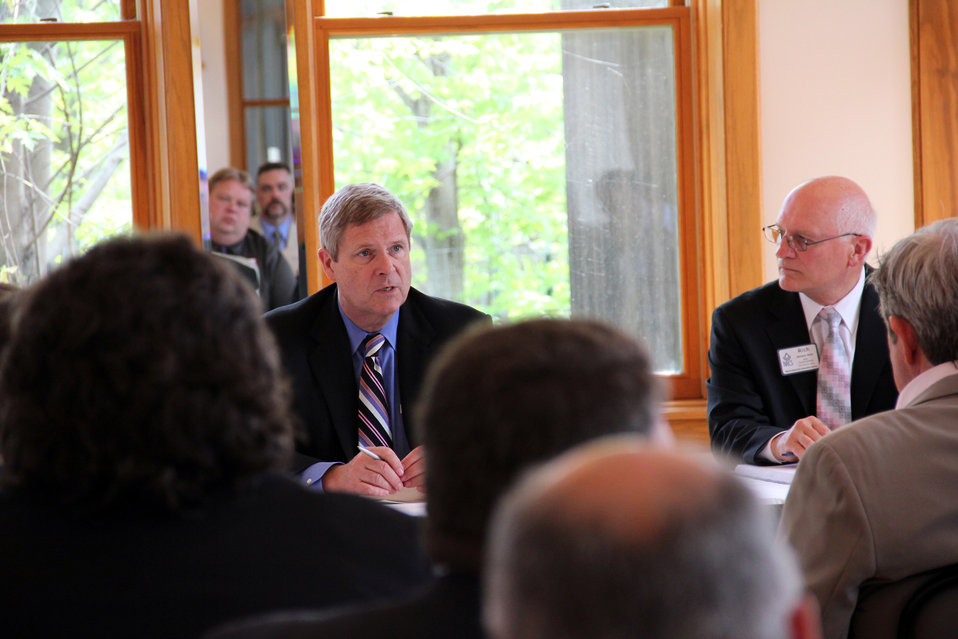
Agriculture Secretary Tom Vilsack speaks at a roundtable discussion with stakeholders in Dubuque, WI. on Wednesday, April 18, 2012.